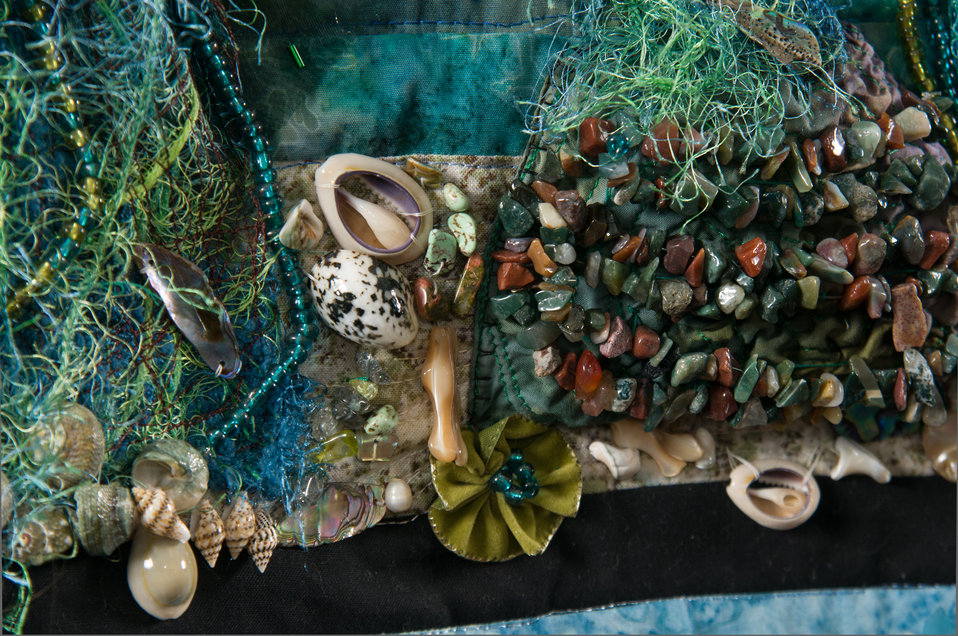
Online Viewer's Choice entries of the 2013 Art & Agriculture, Tuesday, July 9, 2013, in the South Building, Washington, D.C. Themes were expressed by employees from across the department and the contest was open to full-time and part-time USDA employees. Winning artwork will be displayed till the end of the year. U.S. Artistic expression is a creative outlet that is vital for an individual to grow and develop.